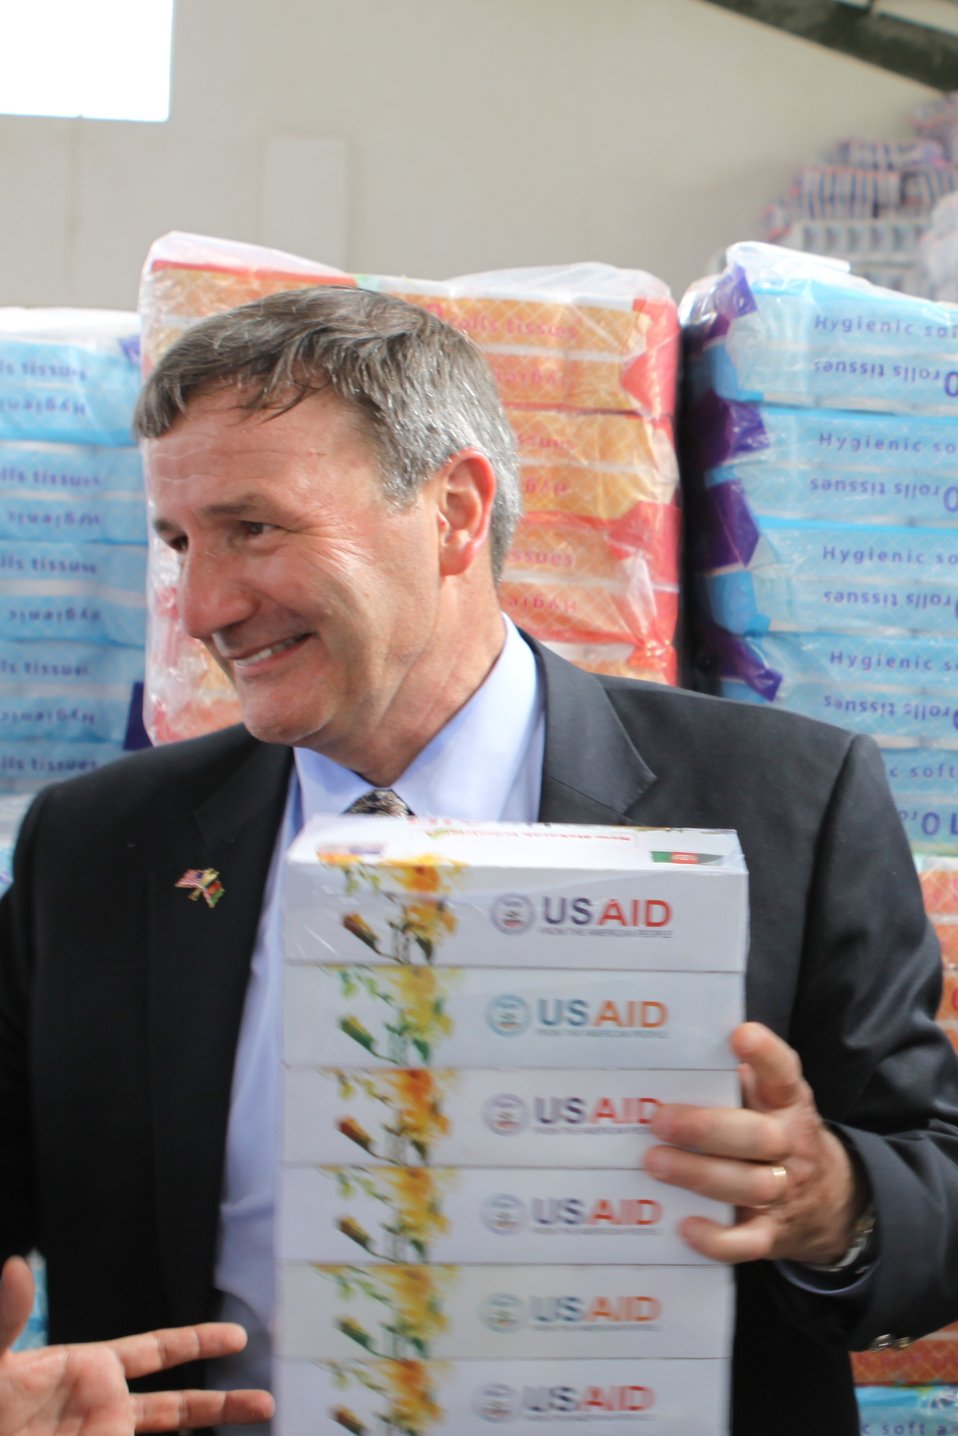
100525 Hirat Marble Conference 831